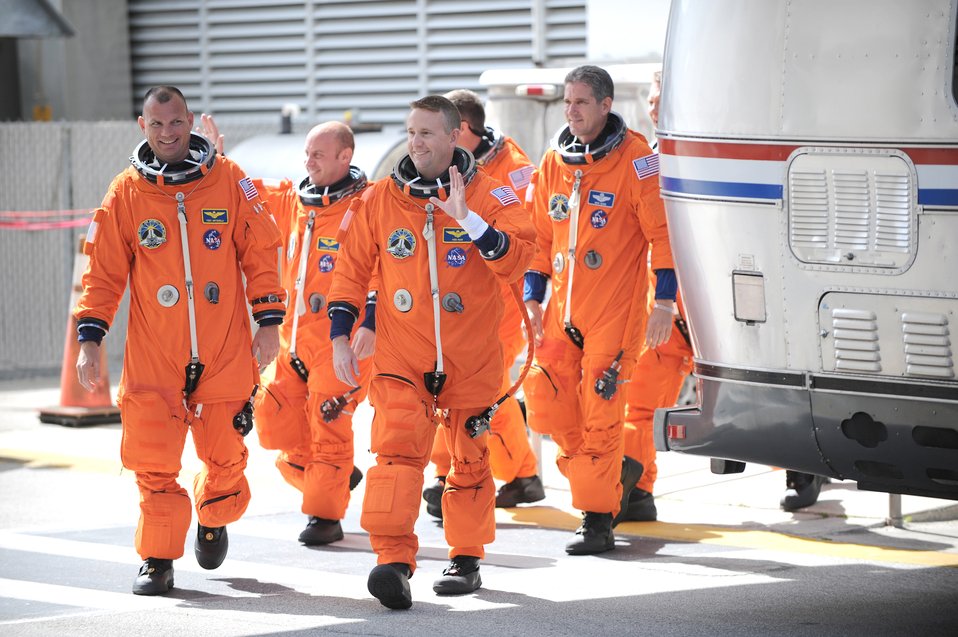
Space shuttle Atlantis

Ken Ham, Garrett Reisman, Michael Good, Tony Antonelli, Piers Sellers and Steve Bowen prepare to board the space shuttle Atlantis May 14, 2010, at the Kennedy Space Center in Cape Canaveral, Fla. Ken Ham is the commander; Garrett Reisman, Michael Good, Piers Sellers, and Steve Bowen are the mission specialists, and Tony Antonelli is the pilot.